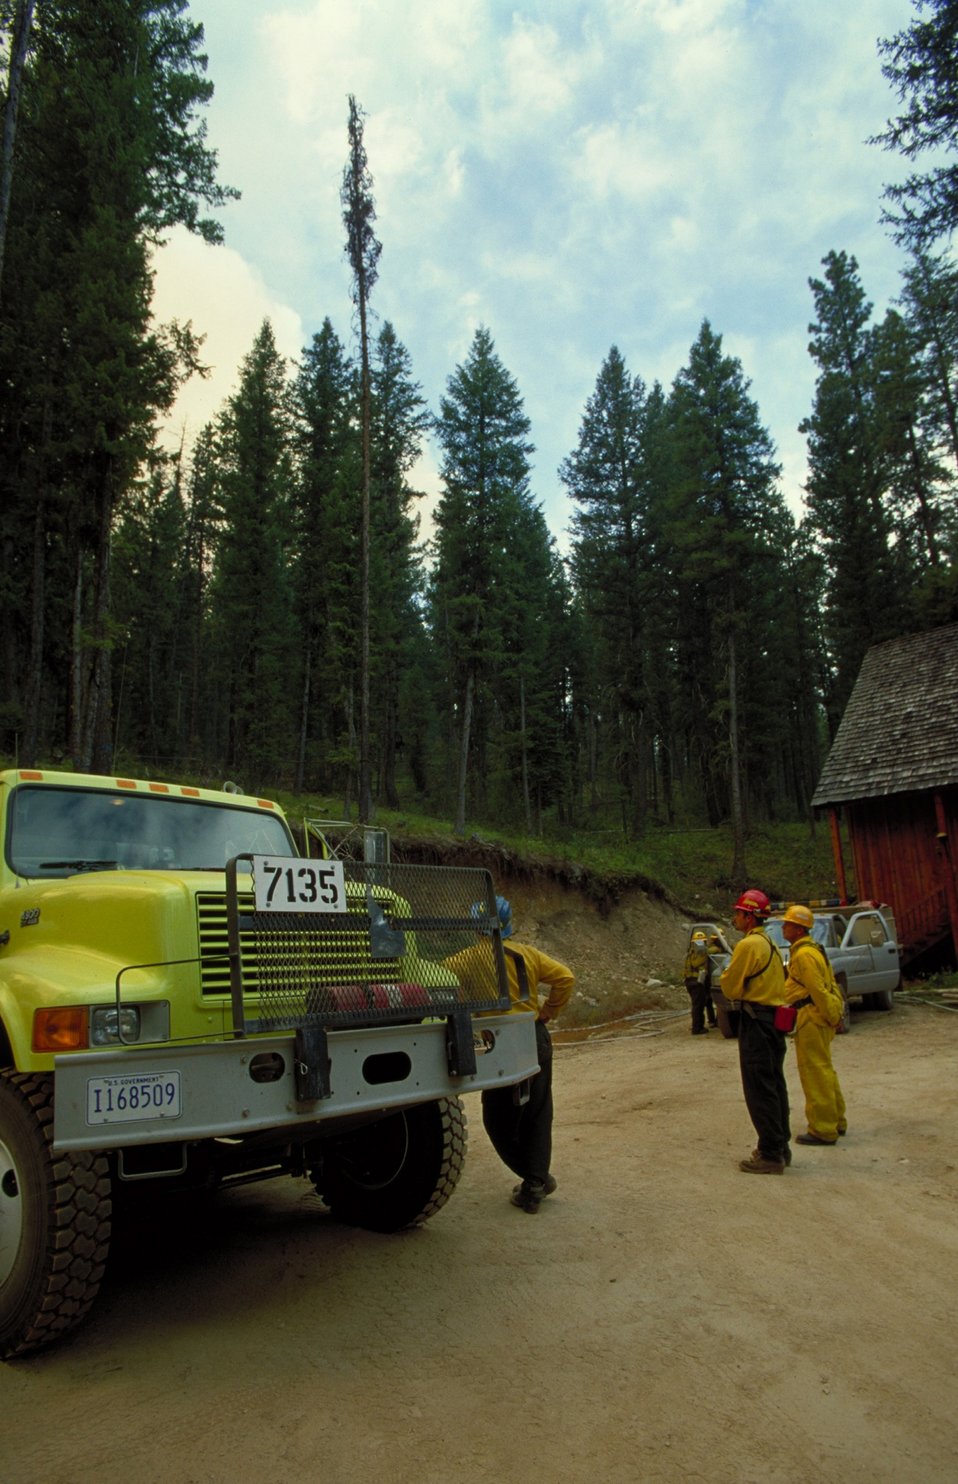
Urban interface BLM Heavy Engine Fire Season 2000 Lower Snake River District LSRD